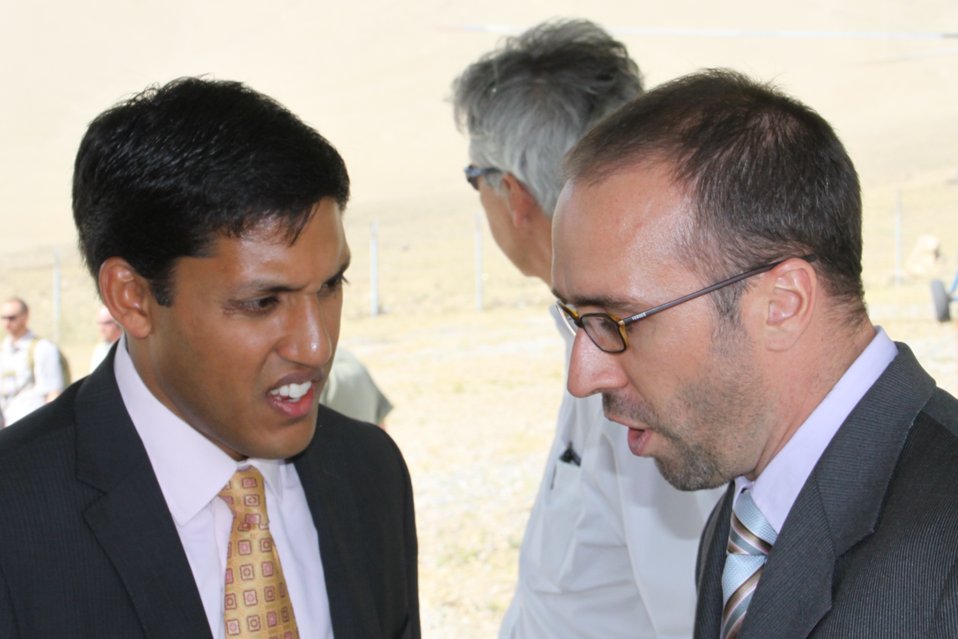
Badam Bagh Farm